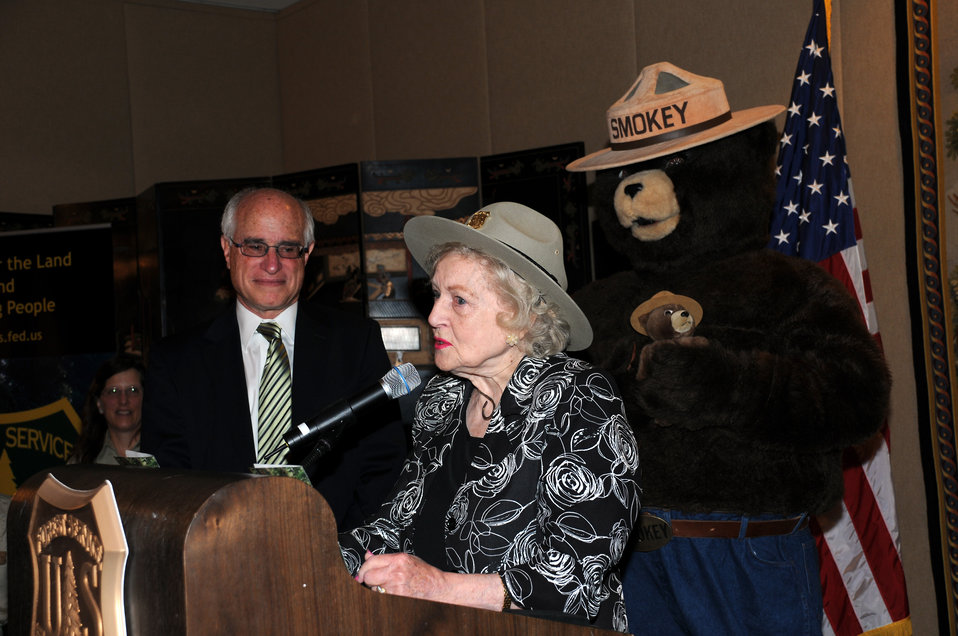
Actress Betty White, newly-appointed Honorary Forest Ranger, delivers some heartfelt comments during her award ceremony at the Kennedy Center for the Performing Arts in Washington, DC November 9. USDA Undersecretary for Natural Resources and the Environment Harris Sherman (left) and Smokey were on hand for the presentation.